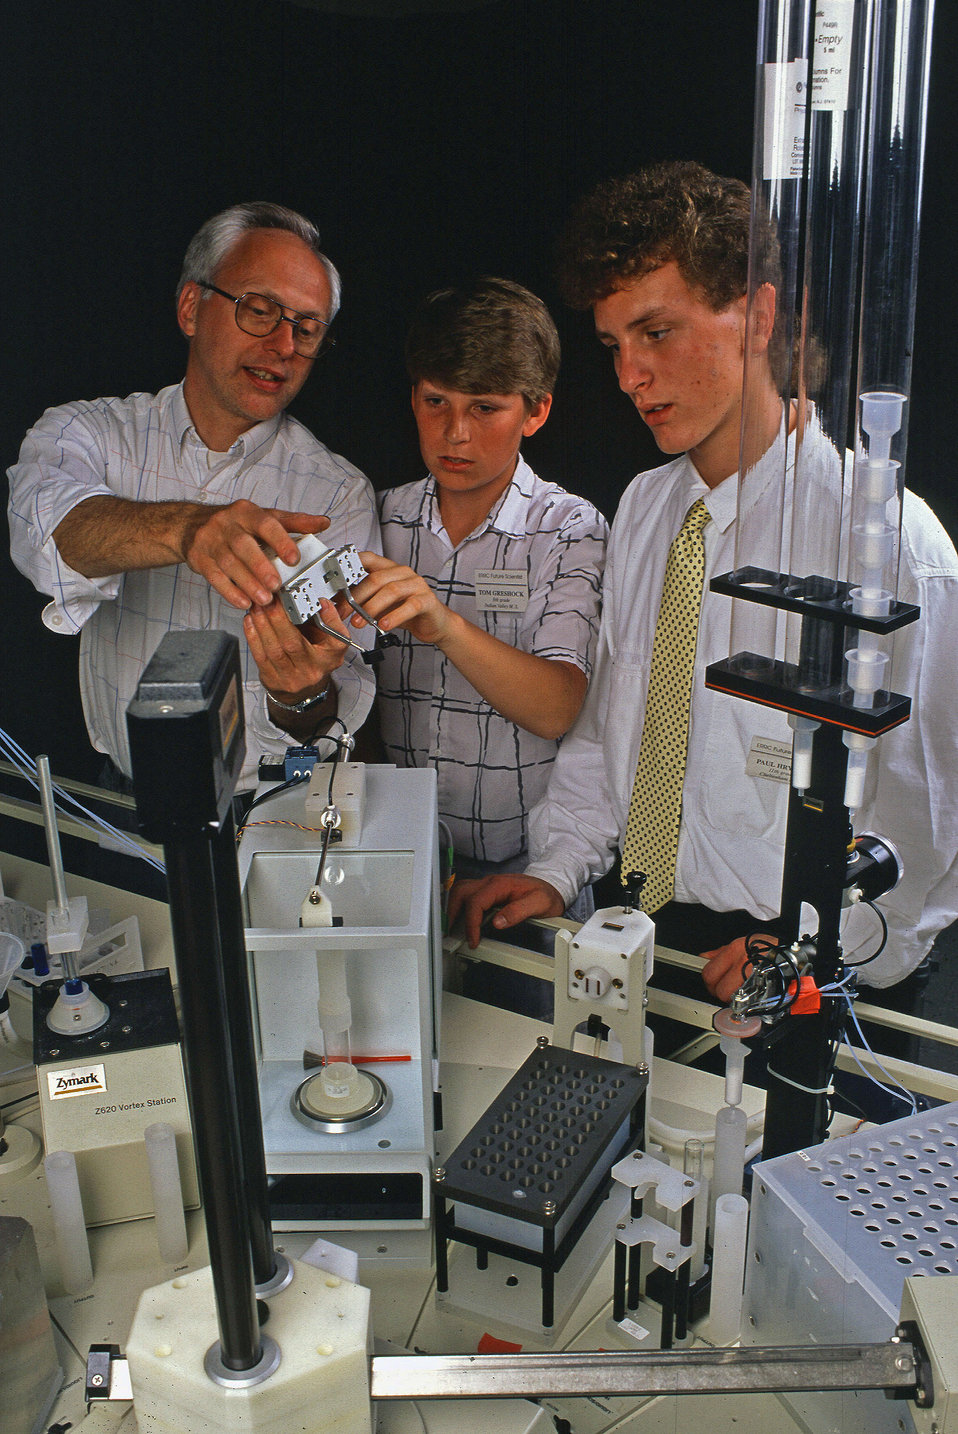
U.S. Department of Agriculture (USDA) Agriculture Research Service (ARS) chemist Ed Piotrowski explains the use of robotics in high volume testing to students Tom Greshock (center) and Paul Hrynko (right) at the Eastern Regional Research Center in Wyndmoor, PA.